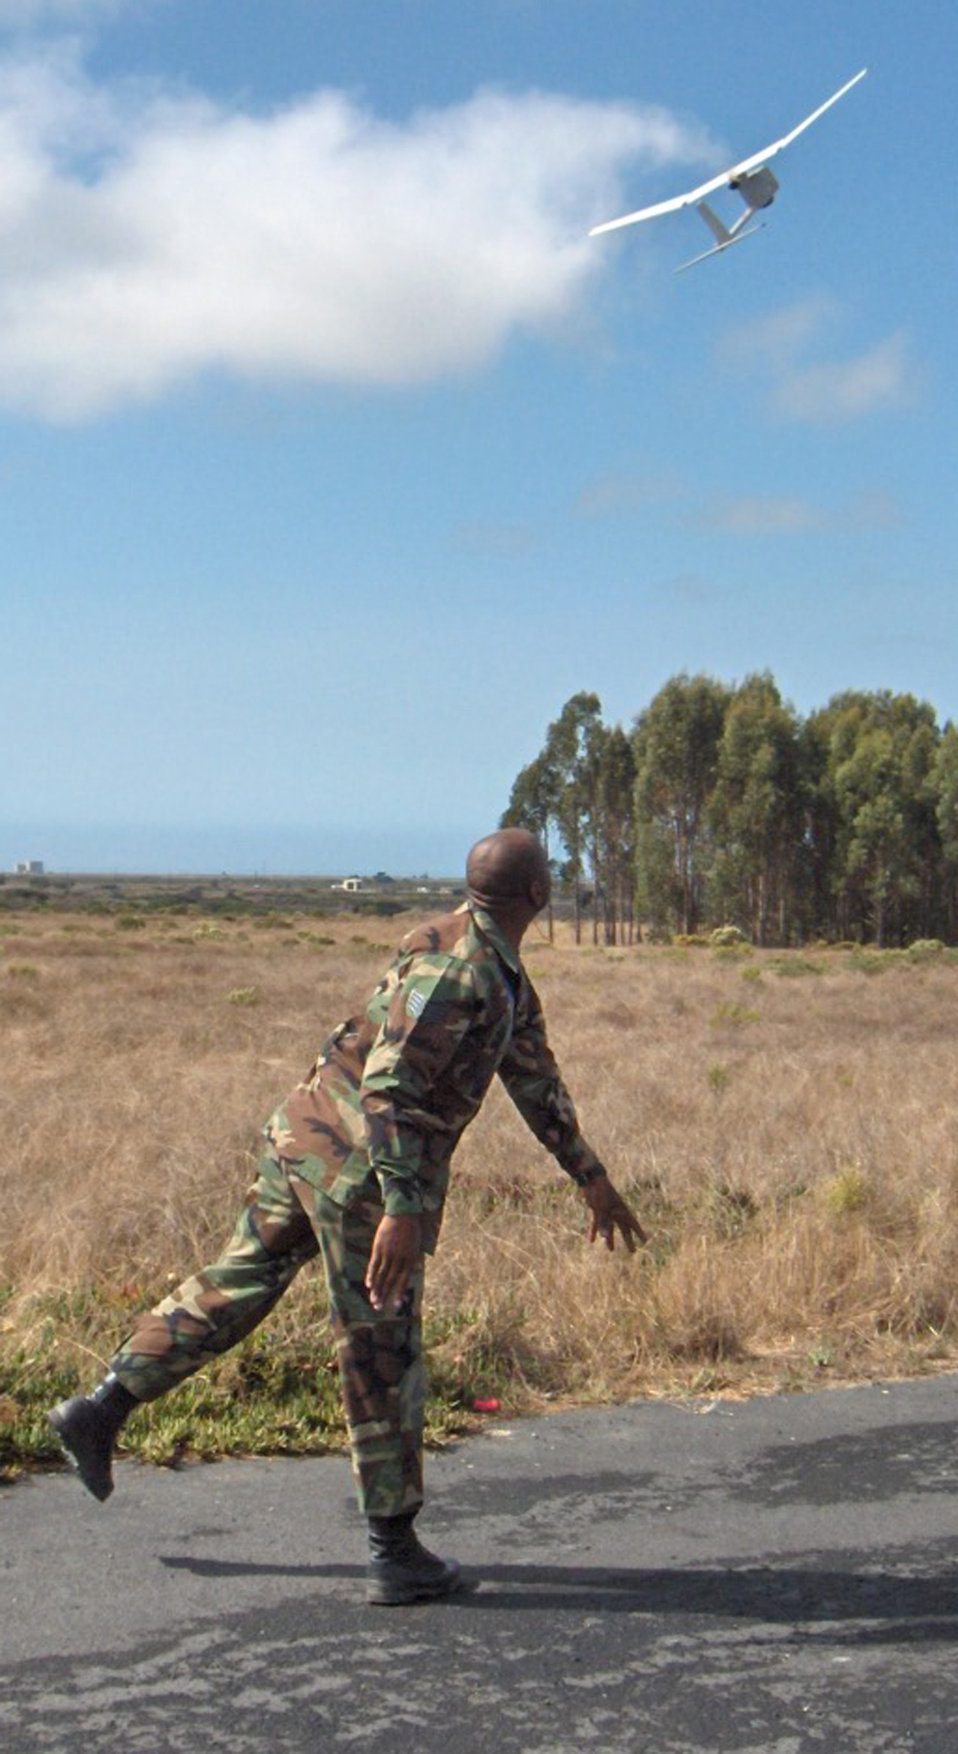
Raven

VANDENBERG AIR FORCE BASE, Calif. (AFPN) -- Staff Sgt. Michael Johnson launches a Raven unmanned aerial vehicle. The plane is so light it is launched by hand. Sergeant Johnson is in the 30th Security Forces Squadron.